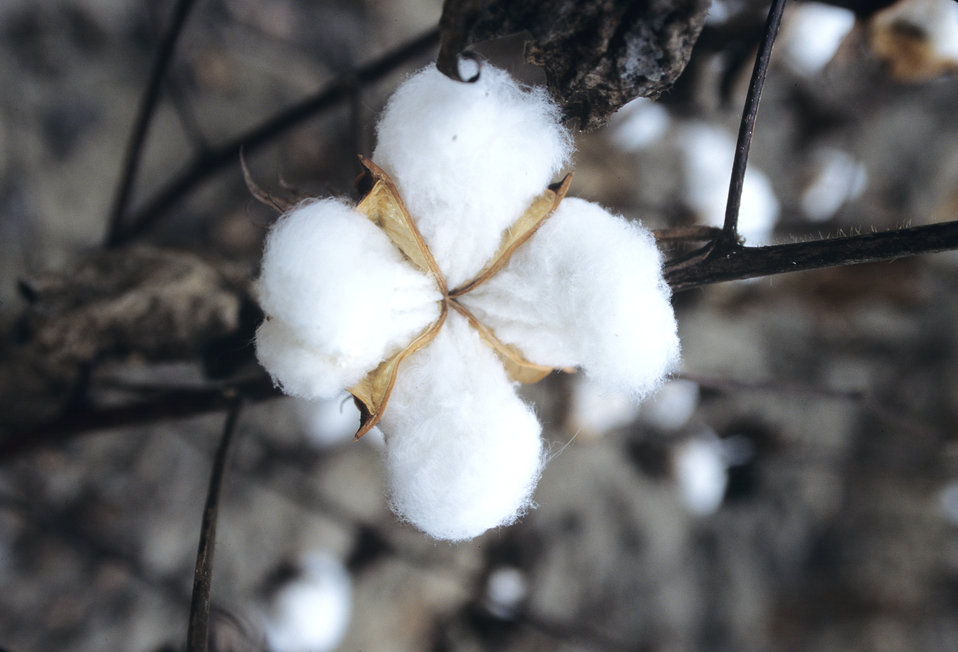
A cotton boll grows in a field in TX on September 2, 1996.